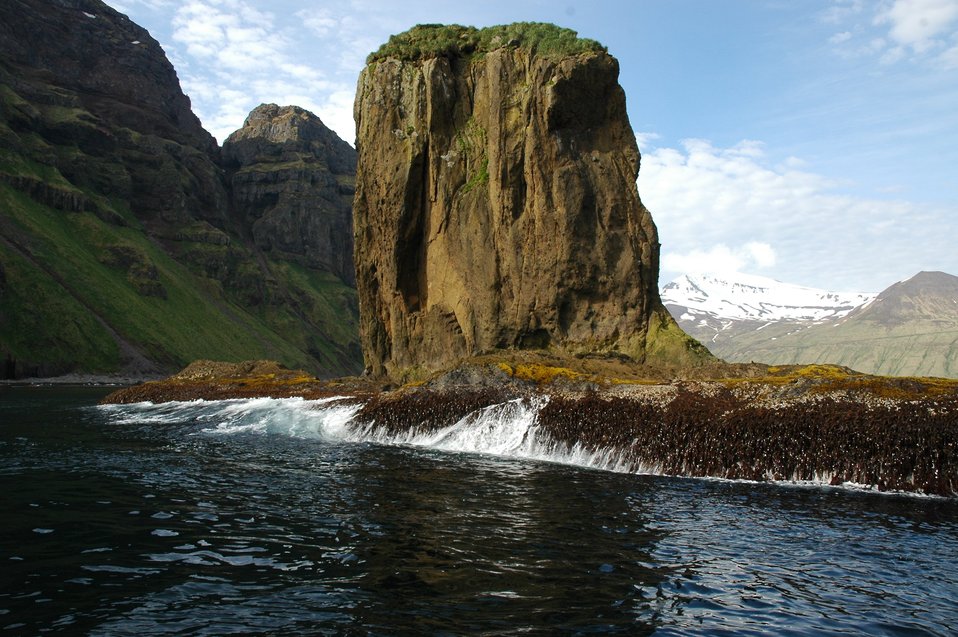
Irishman's Hat at low tide with algae washed by the rise and fall of small swells. Driftwood Bay.